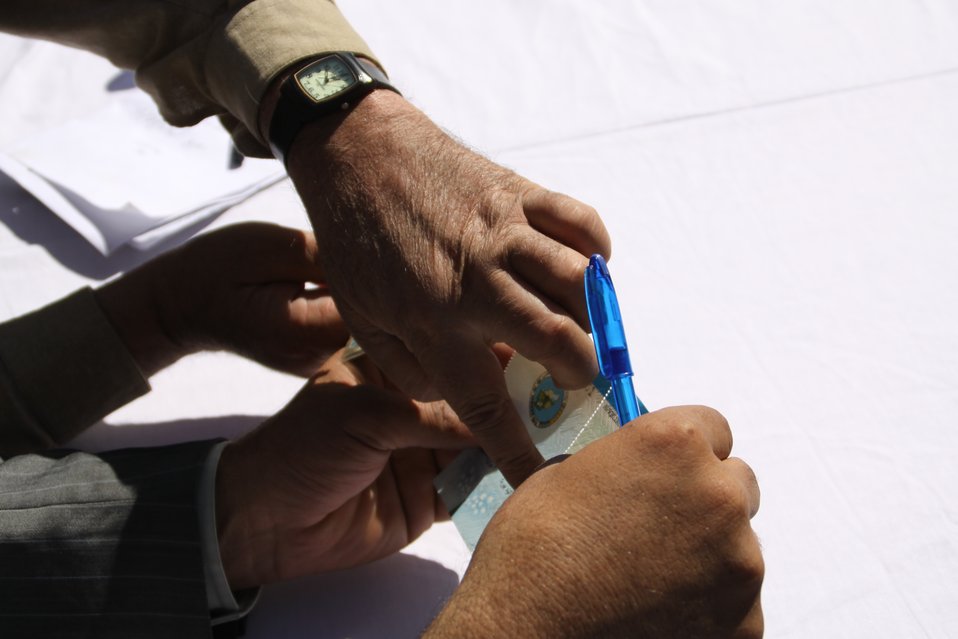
AVIPA Plus Wheat Seed Distribution 101005

US Ambassador Karl Eikenberry and USAID Acting Mission Director Kevin Brownawell joined the Minister of Agriculture, Irrigation and Livestock, H.E. Minister Mohammed Rahimi in signing a Memorandum of Understanding and distributing vouchers to area farmers for wheat and fertilizer.